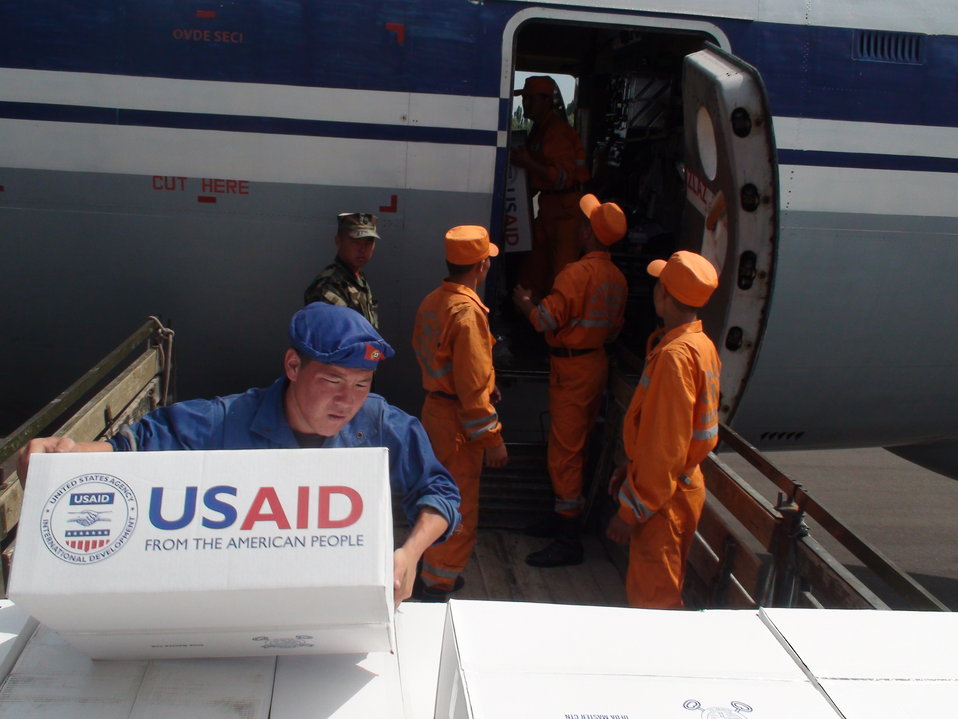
USAID supplied blankets, water containers, and other materials needed by Save The Children in Osh, Kyrgyzstan, on June 26, 2010.